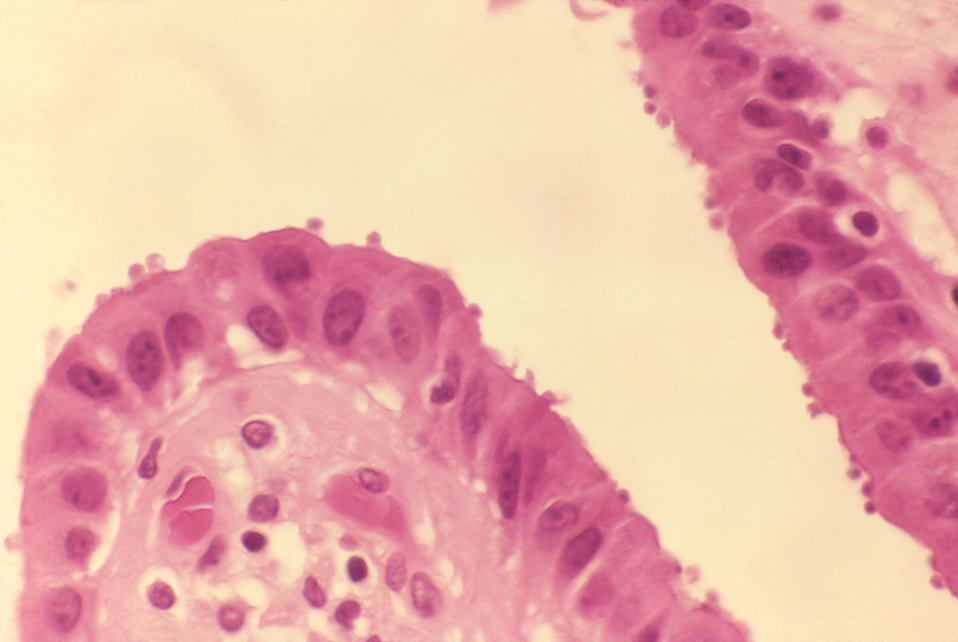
Cryptosporidiosis of gallbladder in AIDS.